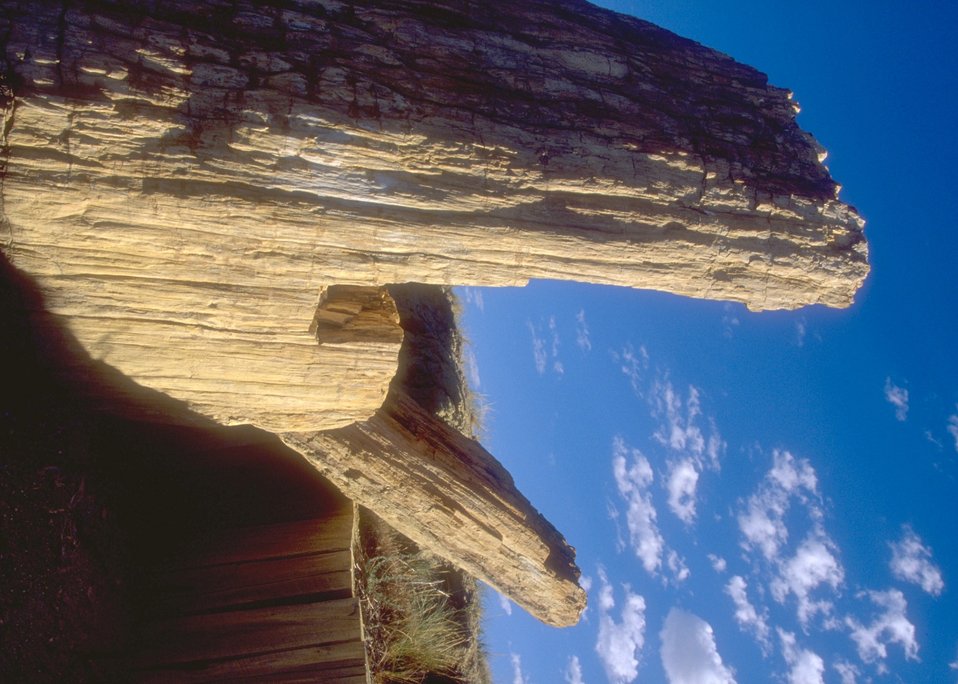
Dry Creek Petrified Tree Area, Buffalo Field Office.